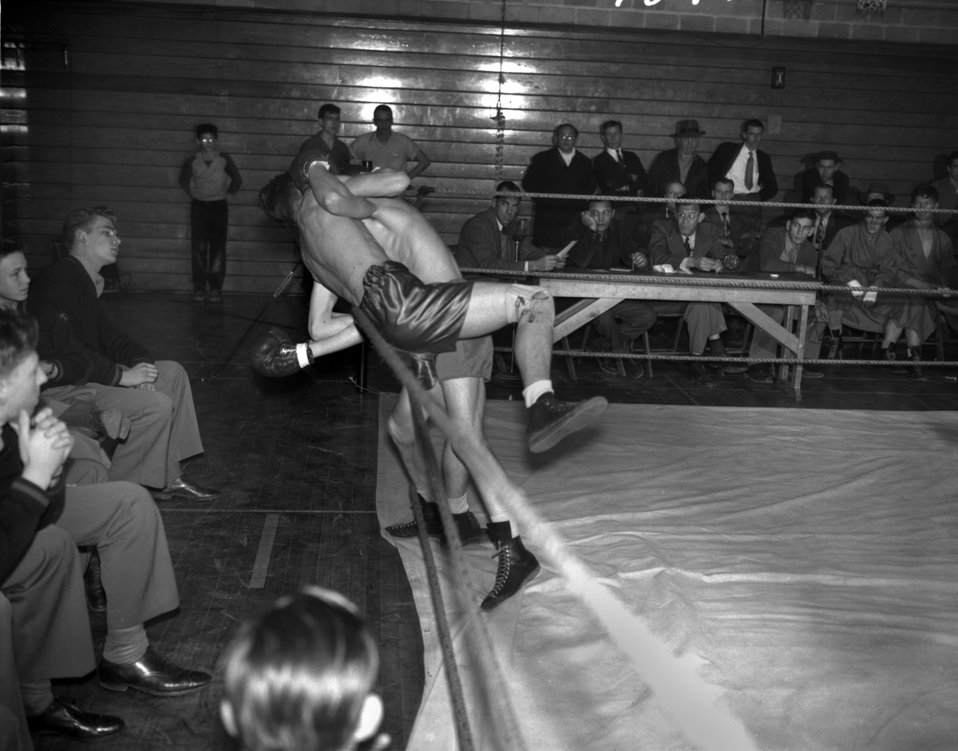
High School Boxing Match

4304-13b DOE photo by Ed Westcott

Oak Ridge Tennessee 2-6-1948